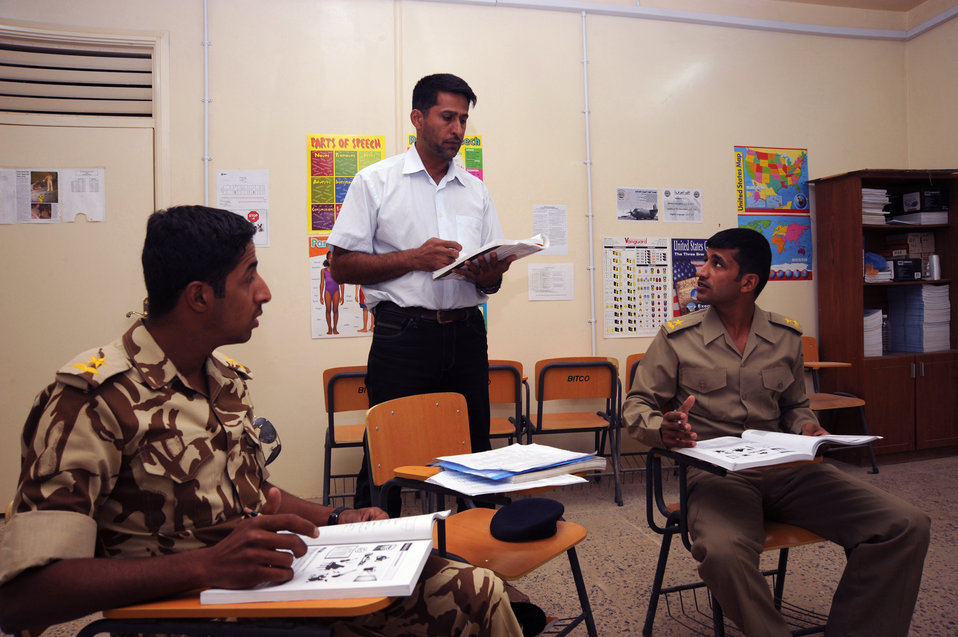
Airmen help future Iraqi pilots learn to speak English

Emad teaches English to Iraqi air force officers Oct. 3, 2009, at Camp Taji, Iraq. Learning English is one of the Iraqi air force's core values, and students must successfully complete the course before moving on to pilot training. Emad is an Iraqi instructor with the 821st Expeditionary Training Squadron. U.S. Air Force instructors assigned to the 821st ETS facilitate the courses and serve as advisers to their Iraqi counterparts.